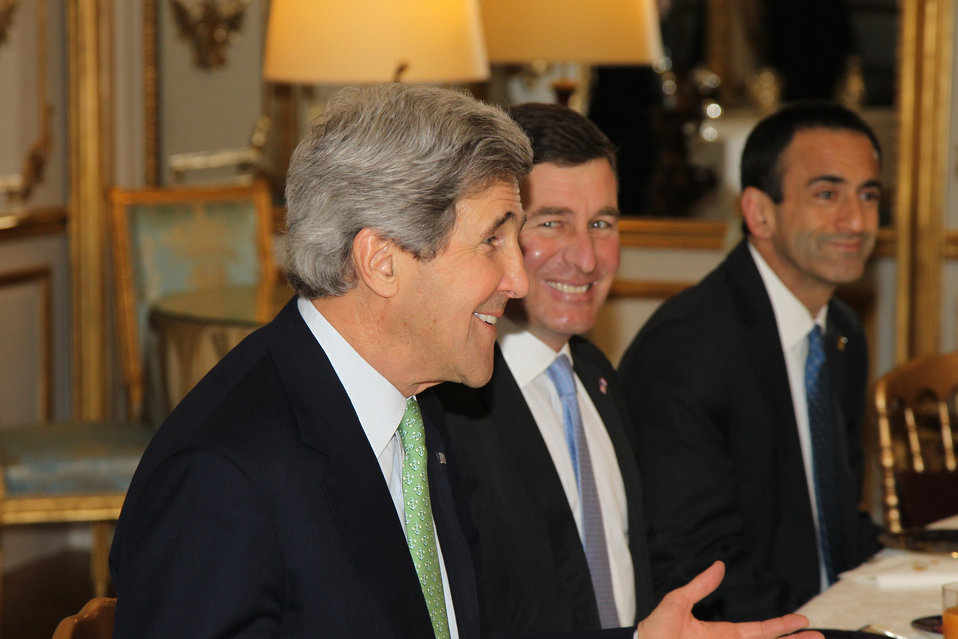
Secretary Kerry Meets With President Hollande

U.S. Secretary of State John Kerry, joined by U.S. Ambassador to France Charles Rivkin and Assistant Secretary of State for European and Eurasian Affairs Philip Gordon, meets with French President Francois Hollande in Paris, France, on February 27, 2013.